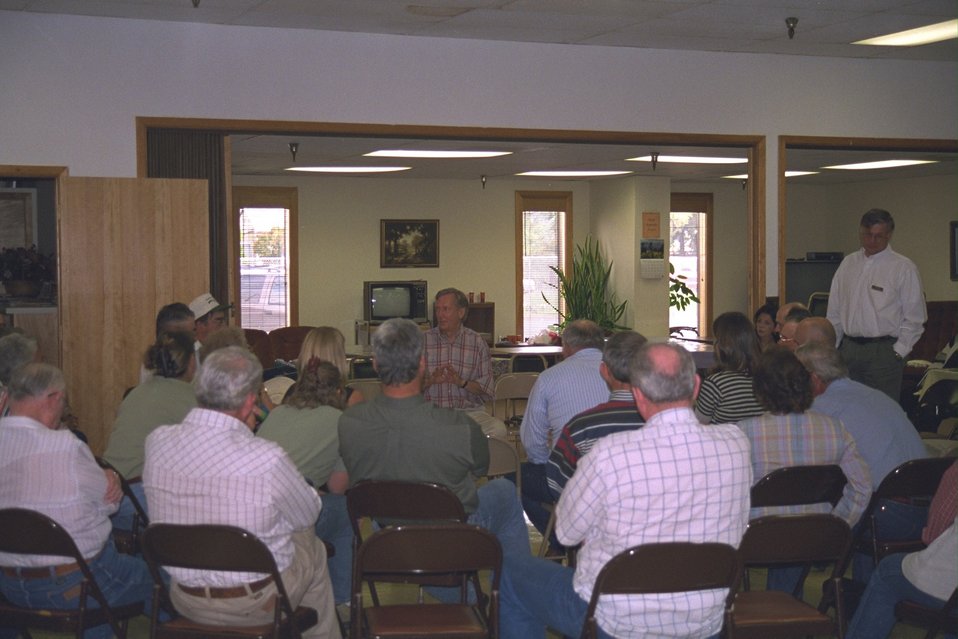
Secretary Babbitt addresses concerns on the Steens Designation at a town meeting in Burns.